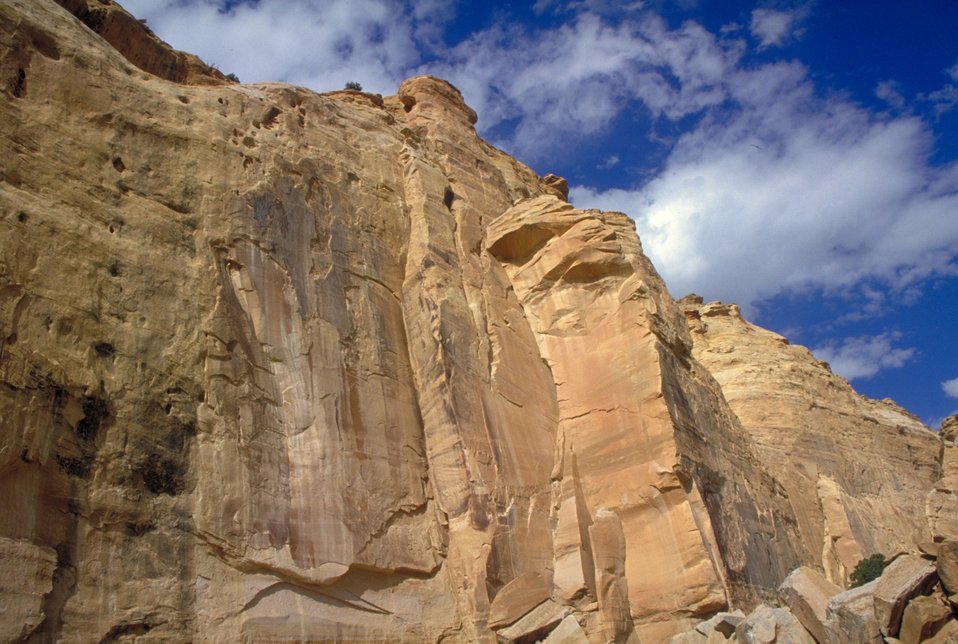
Head of Sinbad in the San Rafael Swell.